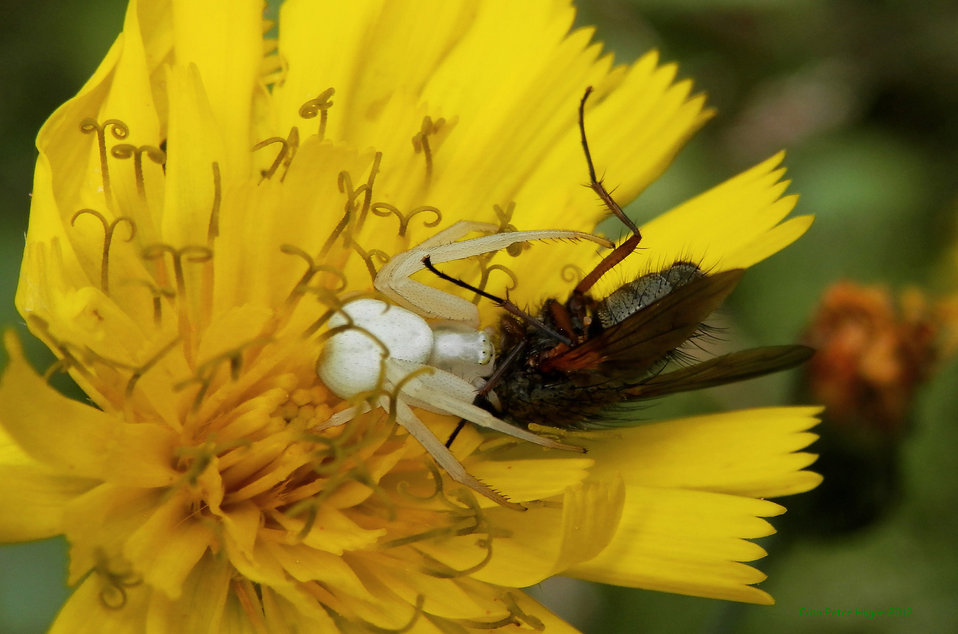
All white crab spider

Slurp of a bow tie.